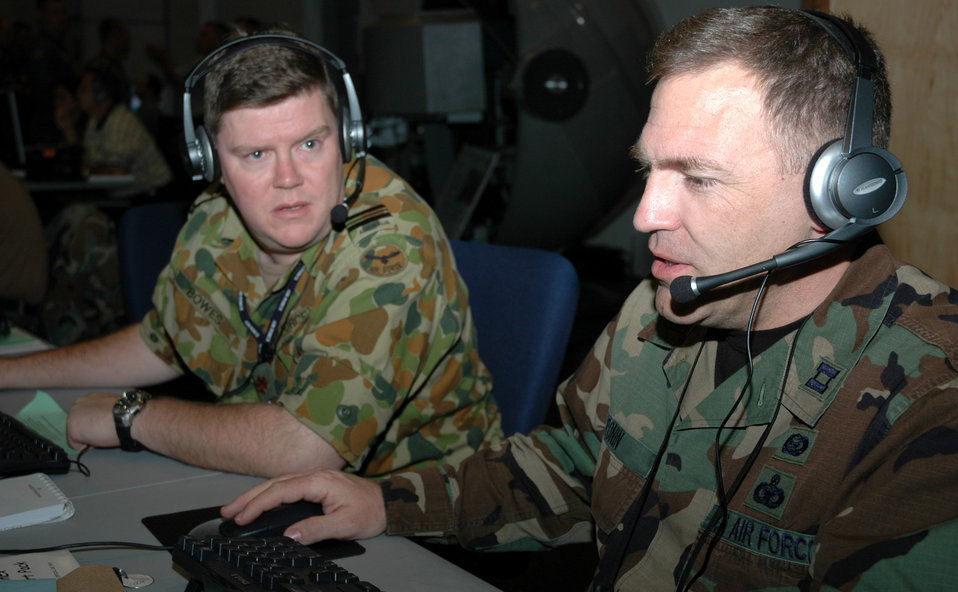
Coalition forces integral part of JEFX 2006

Royal Australian Air Force Squadron Leader Ken Bowes (left) works with Capt. Michael Cronin in the combined air and space operations center at Joint Expeditionary Force Experiment 2006 at Nellis Air Force Base, Nev.